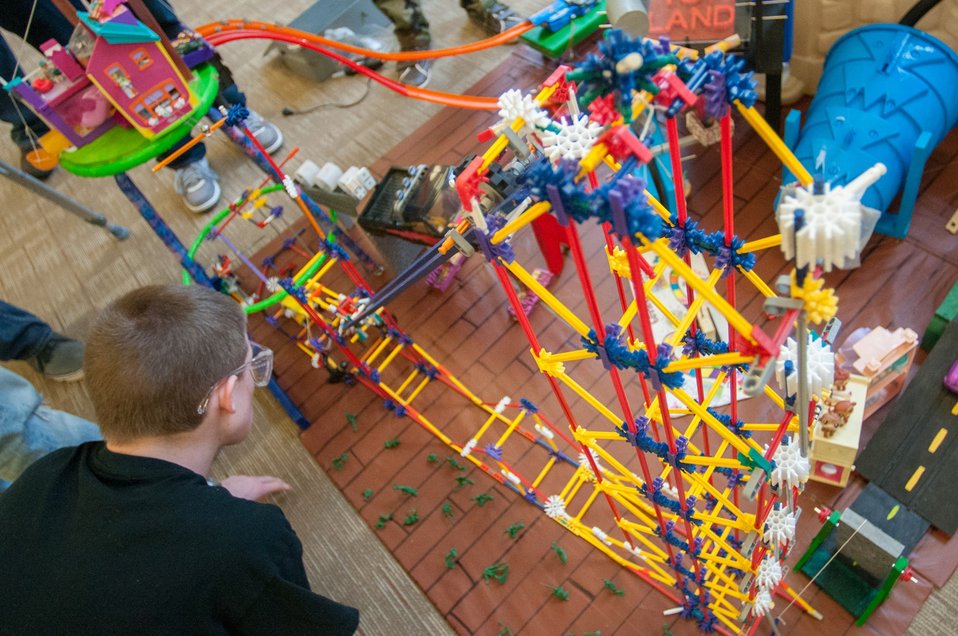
Photo of the Week: More than One Way to Hammer a Nail

Last week, Argonne National Laboratory hosted the 18th annual Rube Goldberg Machine Contest, which gathered nine high school teams in a competition to build a series of simples tasks, combining the principles of physics and engineering.

By using common objects like marbles and bicycle parts, the students were assigned to build a machine that takes at least 20 steps to hammer a nail. In this photo, members of a Hoffman Estates High School team work on assembling a Toyland-themed Rube Goldberg machine.